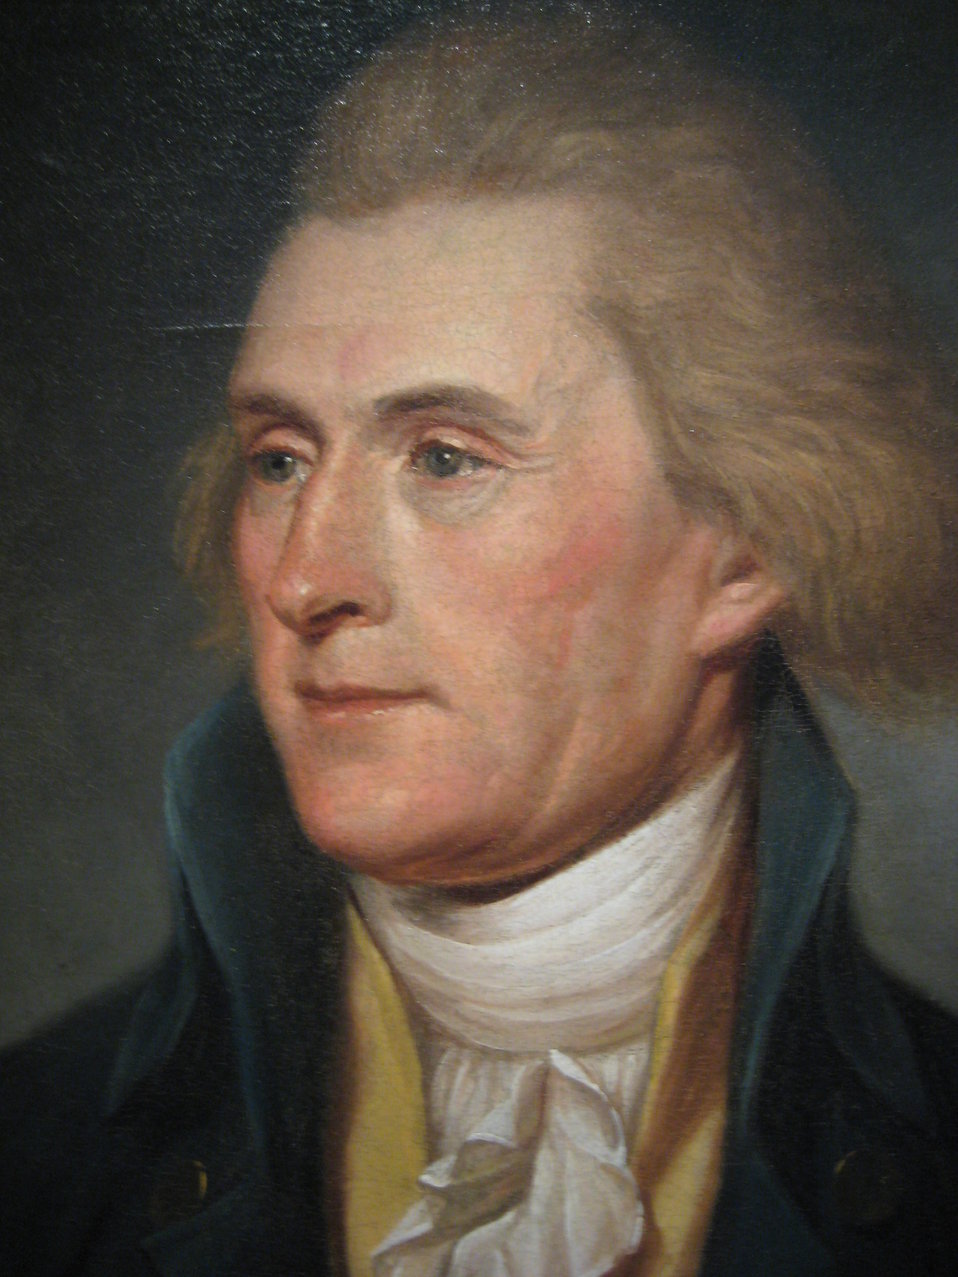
Thomas Jefferson Portrait